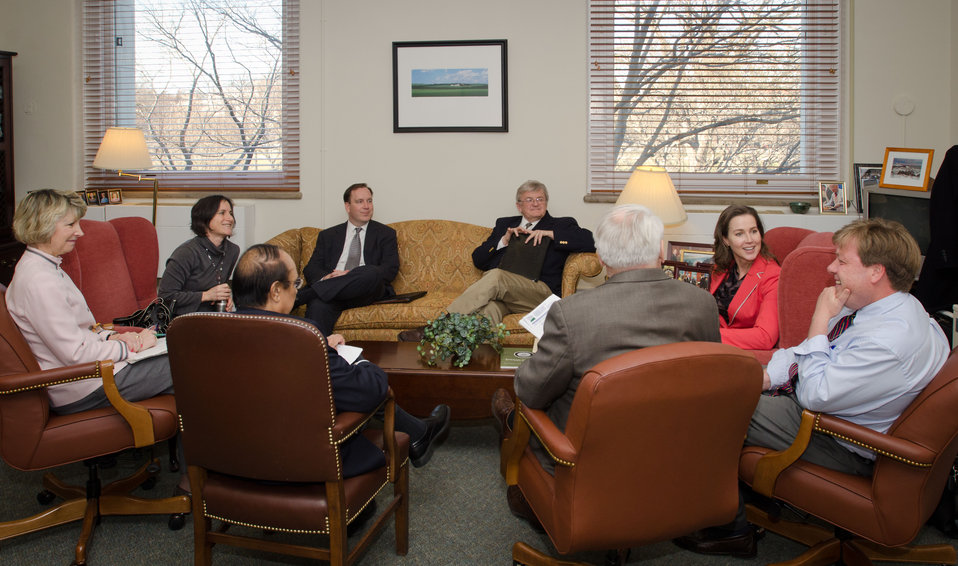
First Lady of Oregon Cylvia Hayes met with Agriculture Under Secretary for Food, Nutrition and Consumer Services (FNCS) Kevin Concannon in his offices at the Agriculture headquarters in Washington, D.C., on Monday, February 27, 2012. They discussed school lunch options and nutrition assistance programs within the Food and Nutrition Service (FNS) who's motto is 'Ending Hunger, Improving Nutrition.'